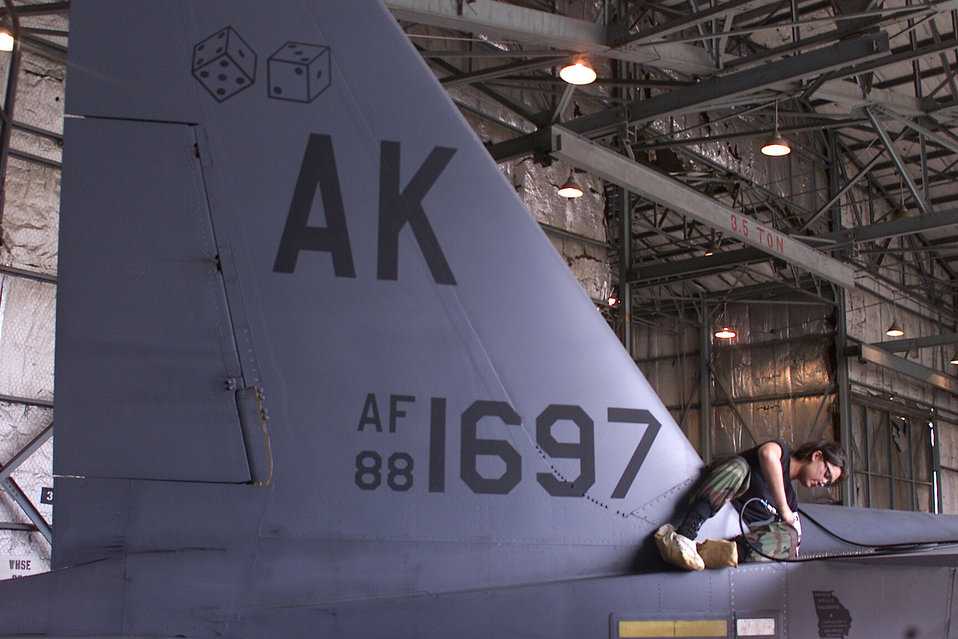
Phase inspection

GWANGJU AIR BASE, South Korea -- Airman 1st Class Megan Corbett depanels an F-15E Strike Eagle for phase inspection here Sept. 7.